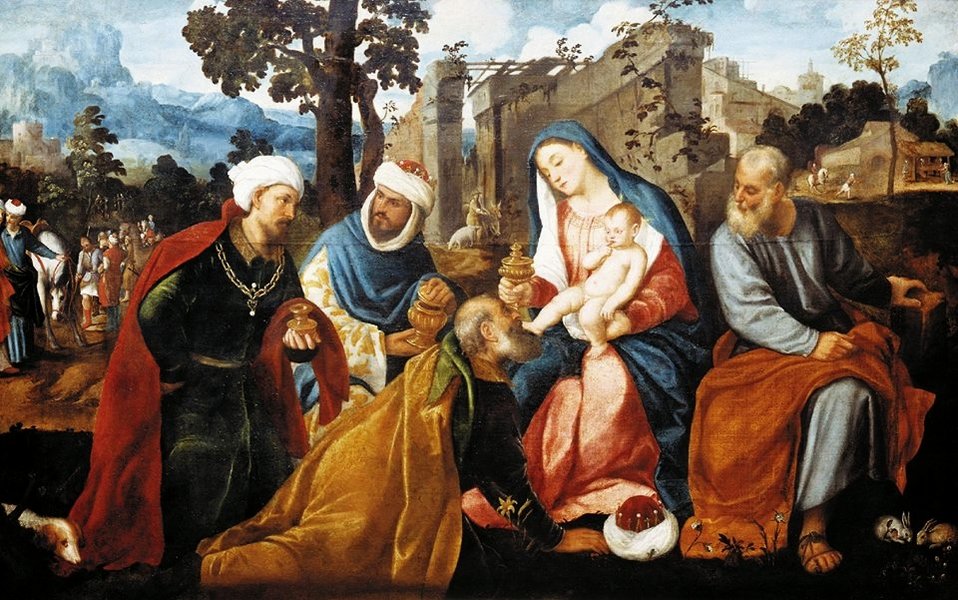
Pitati Adoration of the Magi